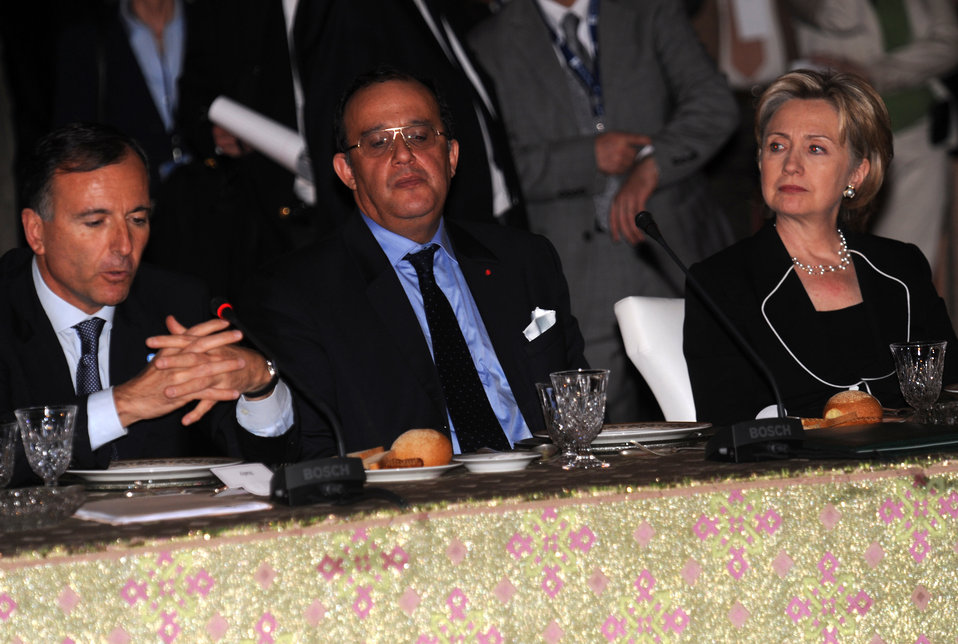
Secretary Clinton Attends 6th Forum for the Future

U.S. Secretary of State Hilllary Rodham Clinton attends the 6th Forum for the Future in Marrakesh, Morocco November 3, 2009.